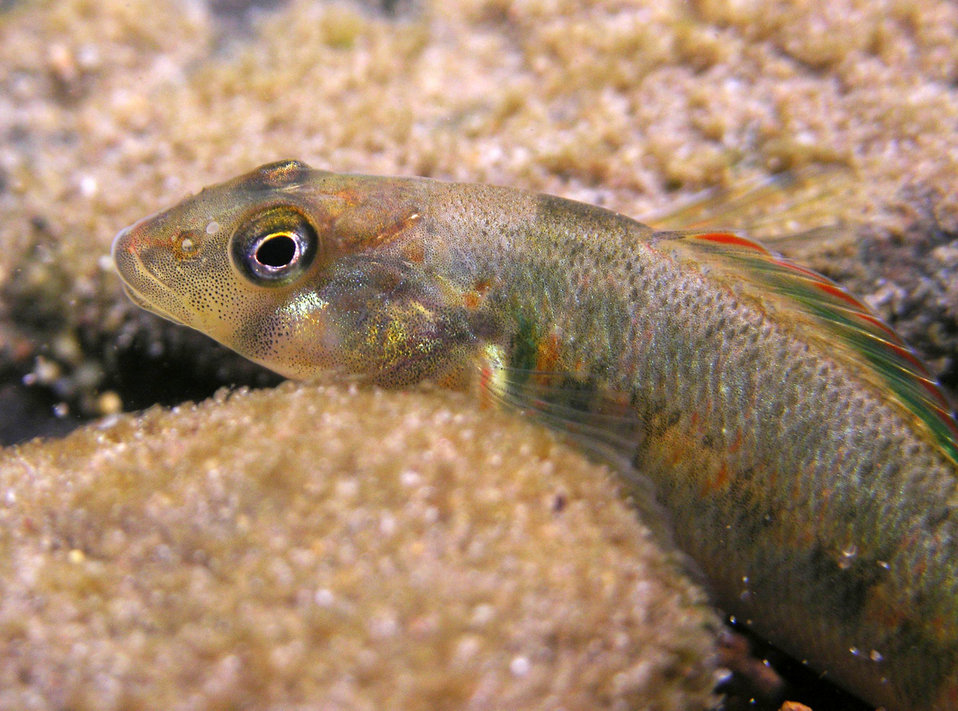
Candy darter photographed in Stoney Creek, VA.